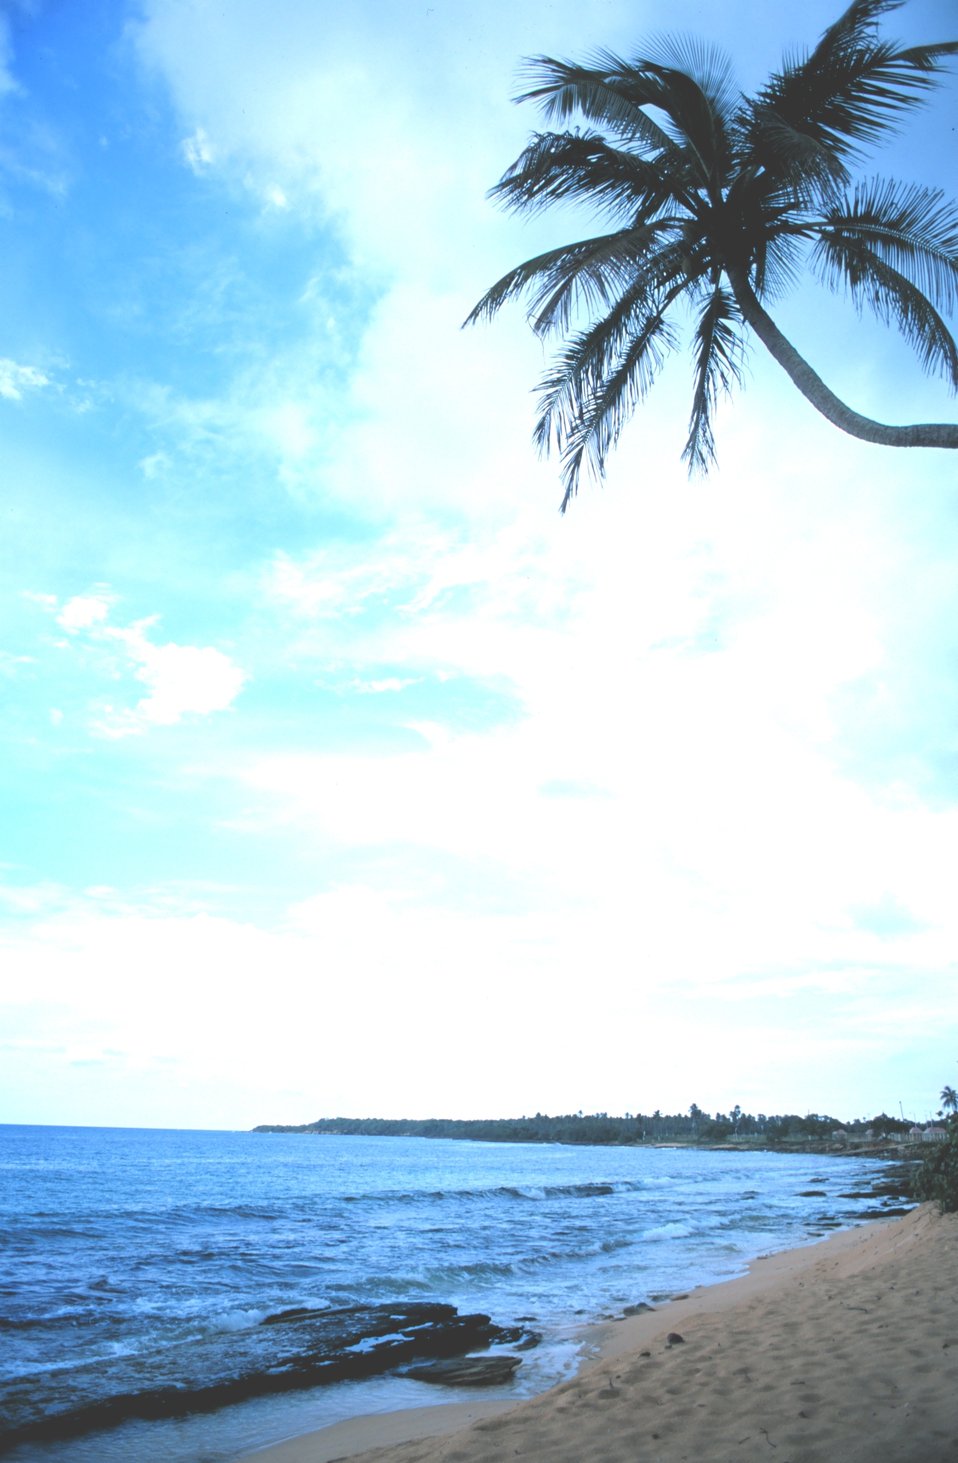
Beach near Puerto Nuevo